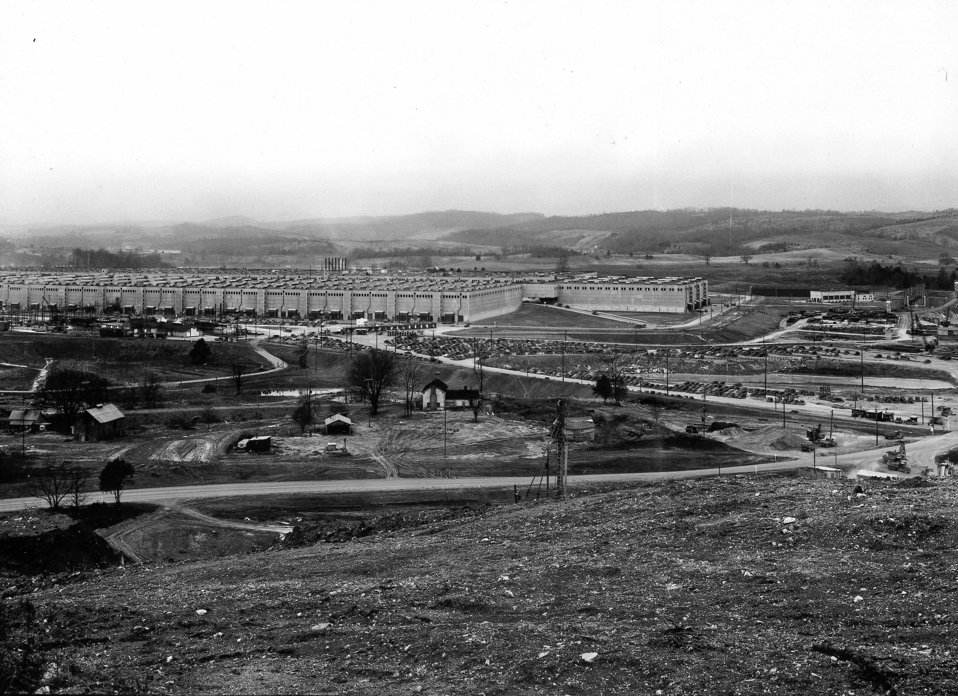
K-25-338 file #28 1945
Aerial view process area/ K-25 'U' bldg.